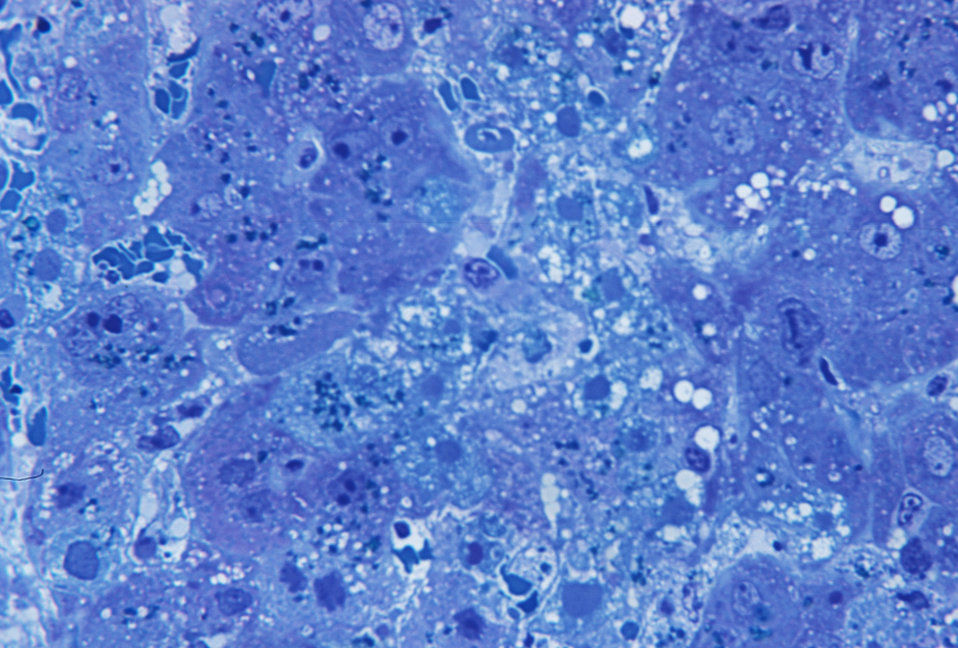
A photomicrograph of hepatitis caused by the Lassa virus, using toluidine-blue azure II stain, magnified 500X.